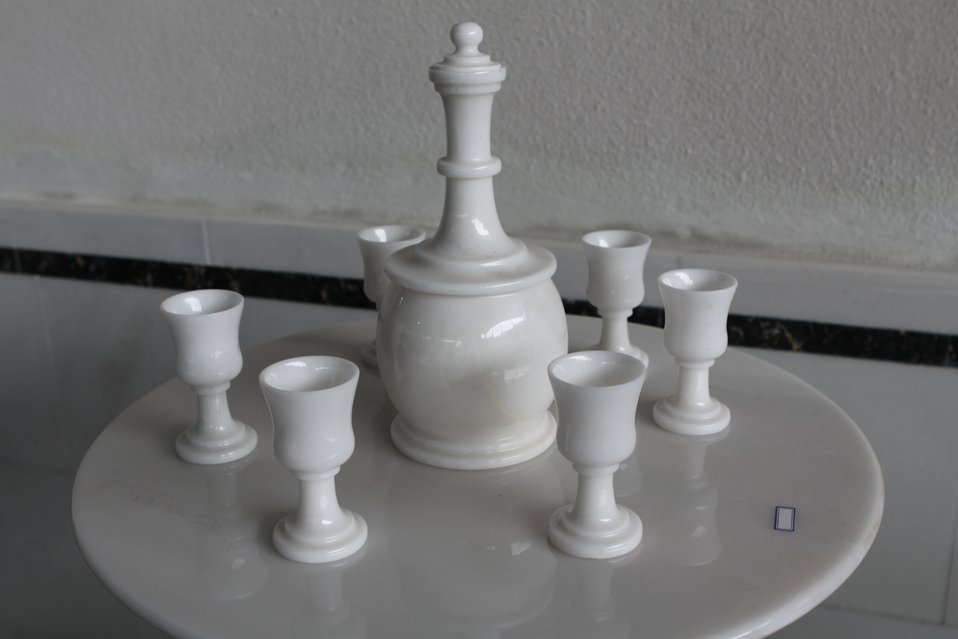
100525 Hirat Marble Conference 275